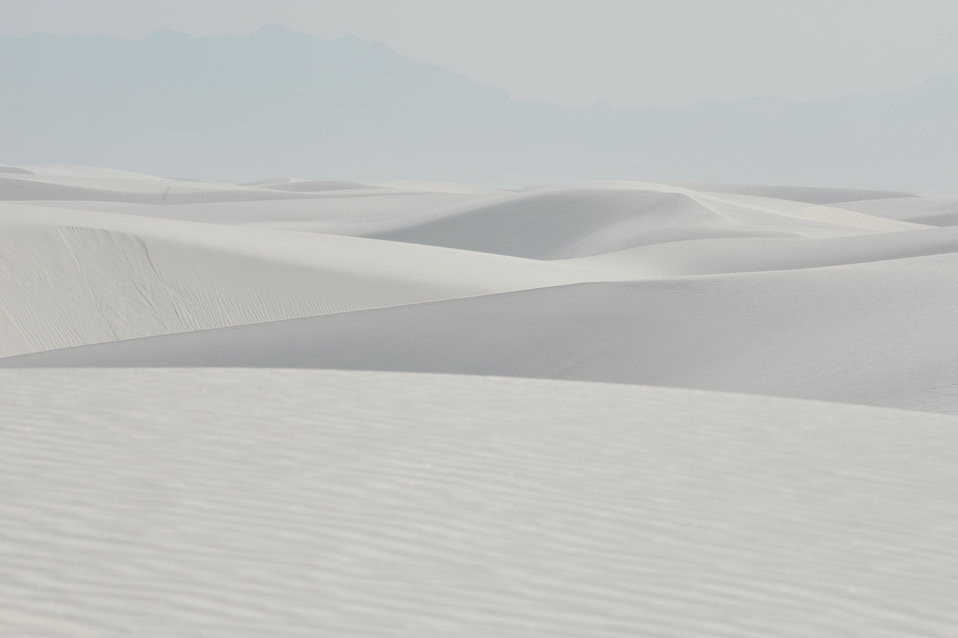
White sands 3

White sands national monument,new mexico.